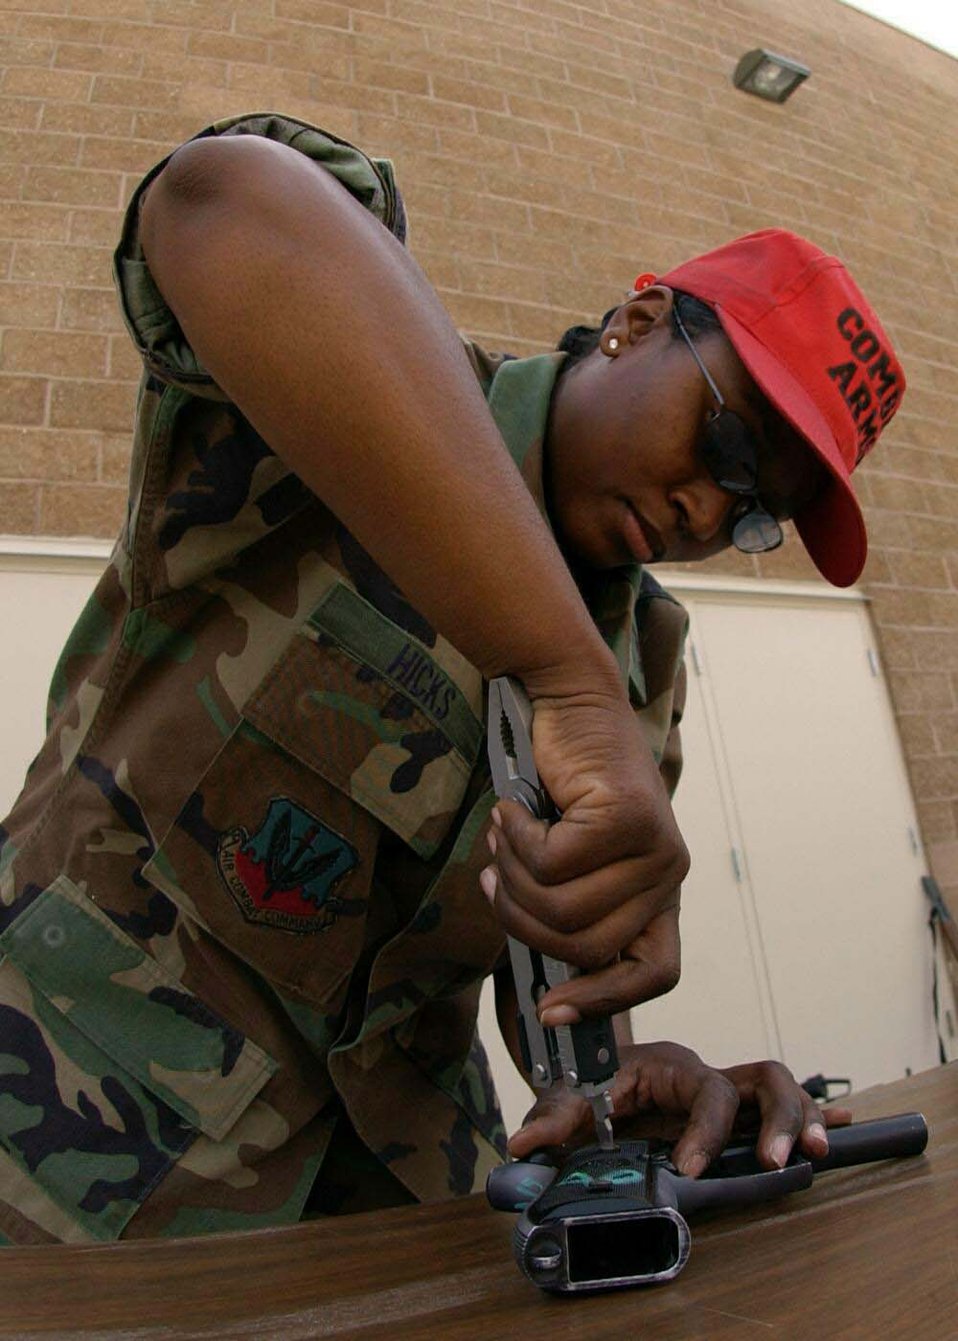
Police week showcase

DAVIS-MONTHAN AIR FORCE BASE, Ariz. -- Tech. Sgt. Latanya Hicks works on securing an M-9 pistol for public view here May 17 during National Police Week. She is a combat arms instructor with the 355th Security Forces Squadron.